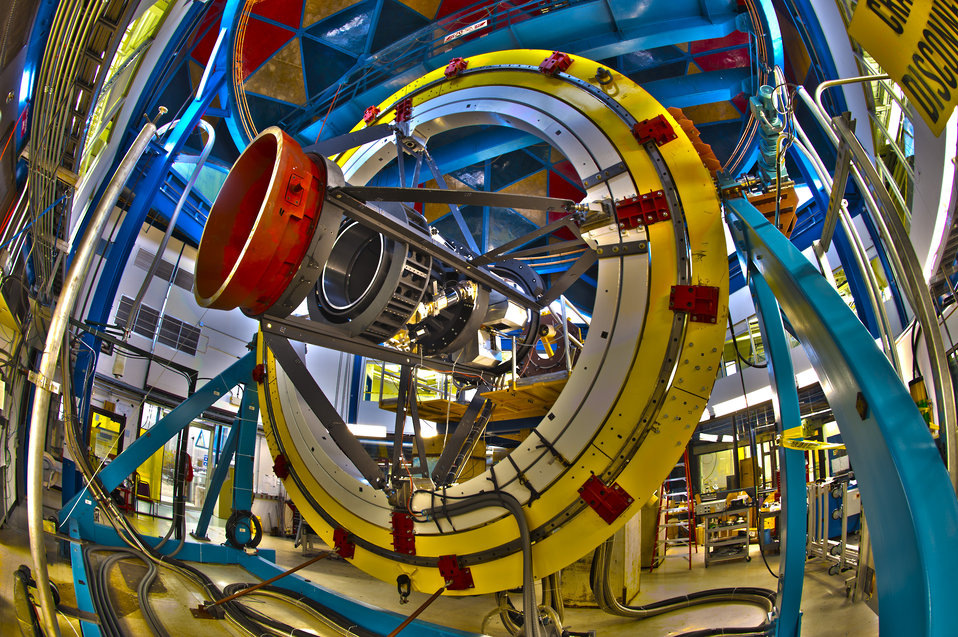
Dark Energy Camera Telescope Simulator at Fermilab.